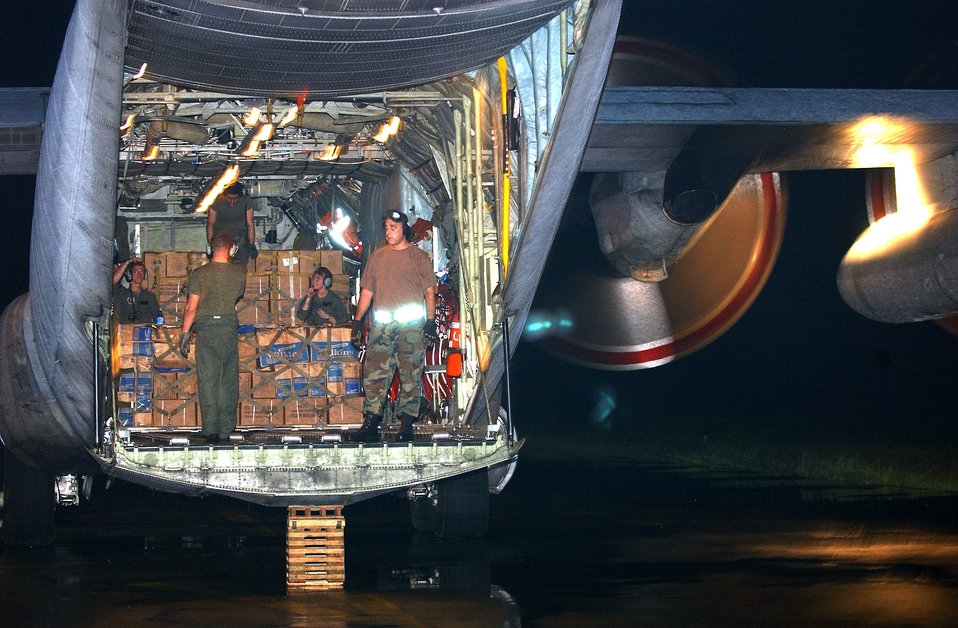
Philippine humanitarian relief

CLARK AIR BASE, Philippines (AFPN) -- A C-130 Hercules crewmember waits for a forklift to unload humanitarian supplies Feb. 19. More than 2,000 U.S. and Philippine servicemembers are working together to assist in the humanitarian relief efforts for victims of the Feb. 17 landslide in the village of Guinsaugon on the island of Leyte, Philippines.